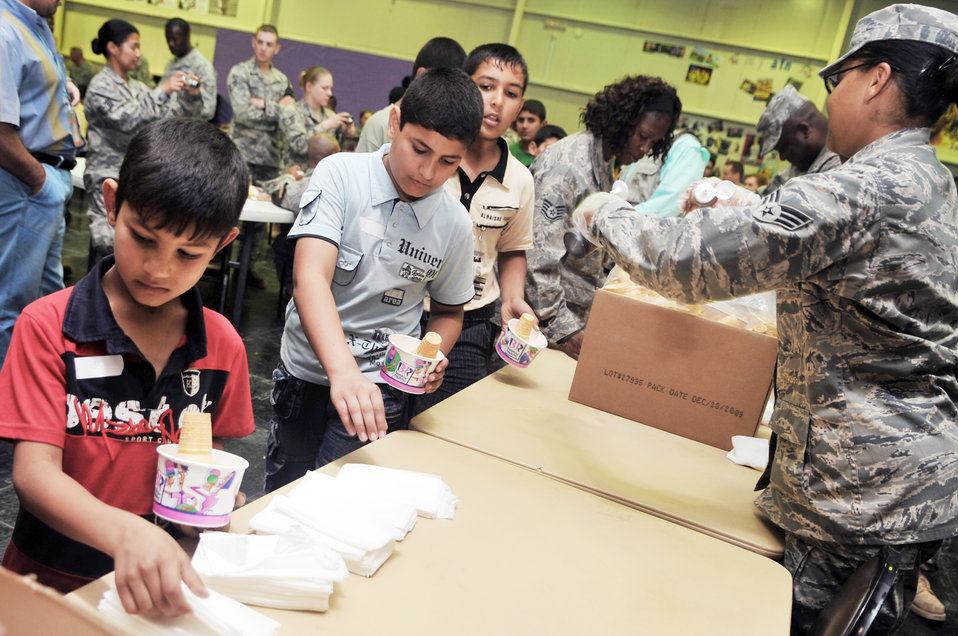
Balad servicemembers strengthen bonds with community, Iraqi children

Members of the 332nd Expeditionary Force Support Squadron serve ice cream to Iraqi children during Iraqi Kids Day April 24, 2010, at Joint Base Balad, Iraq.